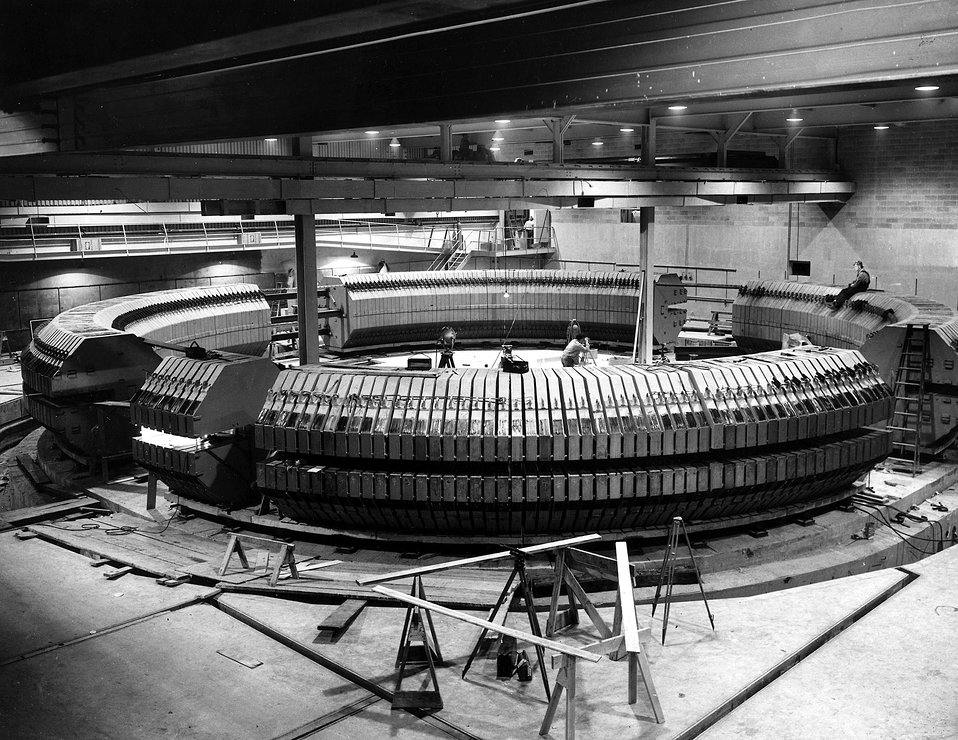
A view of the erection of the magnet. c. 1950